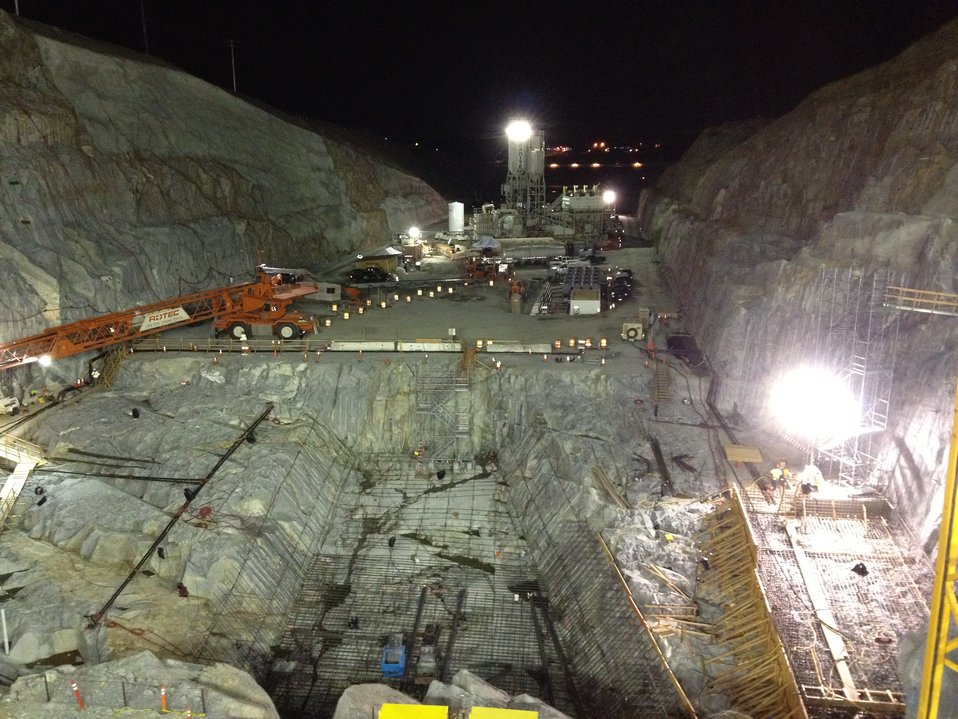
Nighttime concrete placement at Folsom spillway

The U.S. Army Corps of Engineers Sacramento District works at night during concrete placement for the auxiliary spillway at the Folsom Dam Joint Federal Project in Folsom, Calif., June through August 2012. The work is being done at night when temperatures are lowest, aiding the concrete’s cure. The district is building the auxiliary spillway in cooperation with the U.S. Bureau of Reclamation, the state’s Central Valley Flood Protection Board and the Sacramento Area Flood Control Agency to improve the safety of the existing Folsom Dam in Folsom, Calif., and reduce flood risk for the greater Sacramento area. (U.S. Army courtesy photo/Released)